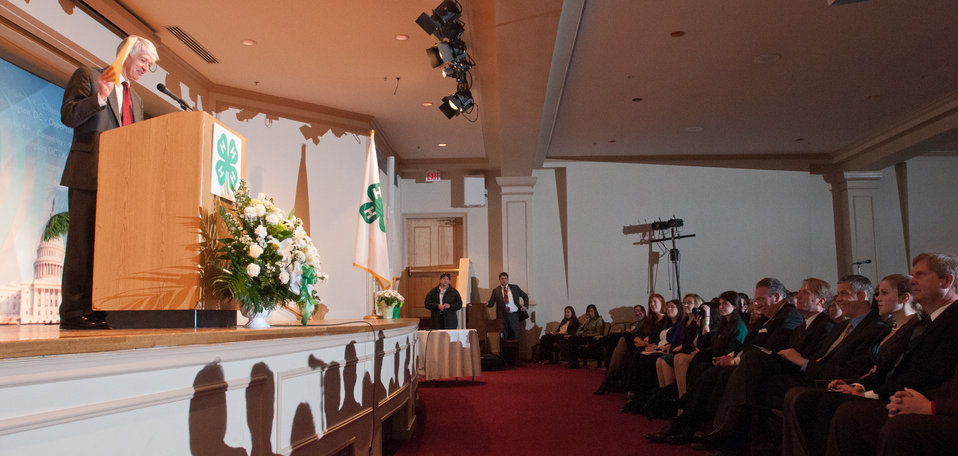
U.S. Department of Agriculture (USDA) National Institute of Food and Agriculture’s Director Dr. Roger Beachy admitted that in his excitement about today, he left his prepared notes at home, and he had to jot what he remembered on the paper he held up during this day’s opening remarks to approximately 300 youths from 47 states or territories and Canada at the National 4-H Conference on Tuesday, April 5, 2011 in Washington, DC. The conference is the premier youth development opportunity of the USDA. Aged between 15-19 years old the attendees were selected by various means by their states to represent them at the conference.